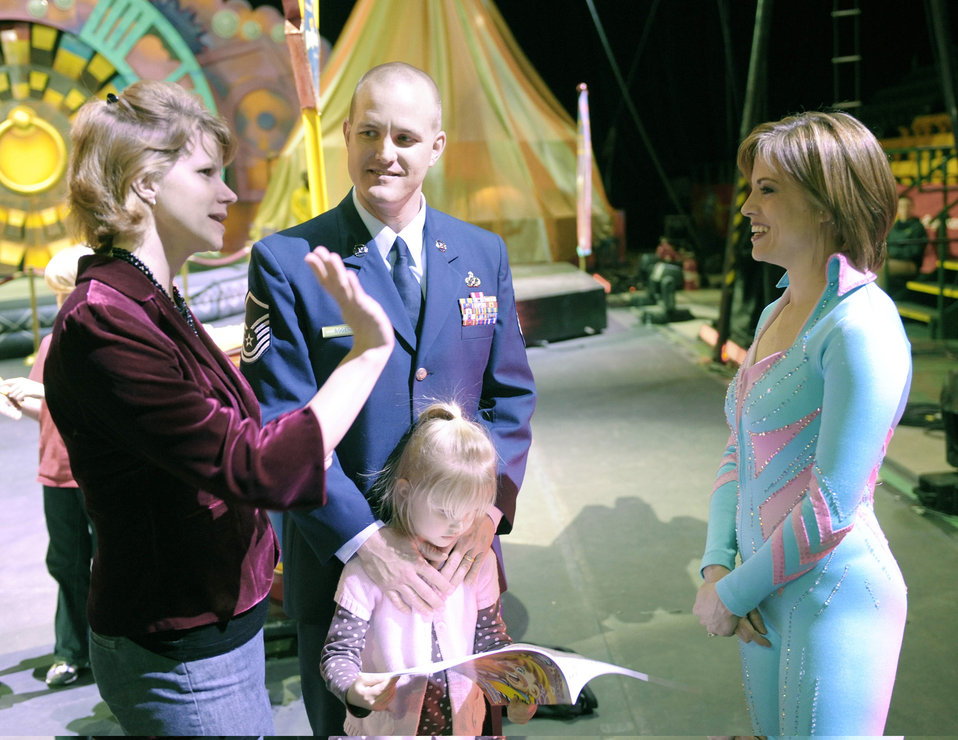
YOAFF & Circus

Master Sgt. Cameron Rogers looks on as his wife Maggie talks with circus human cannonball and former Air Force reservist Tina Miser March 26, 2010, prior to the start of the Ringling Bros. and Barnum & Bailey